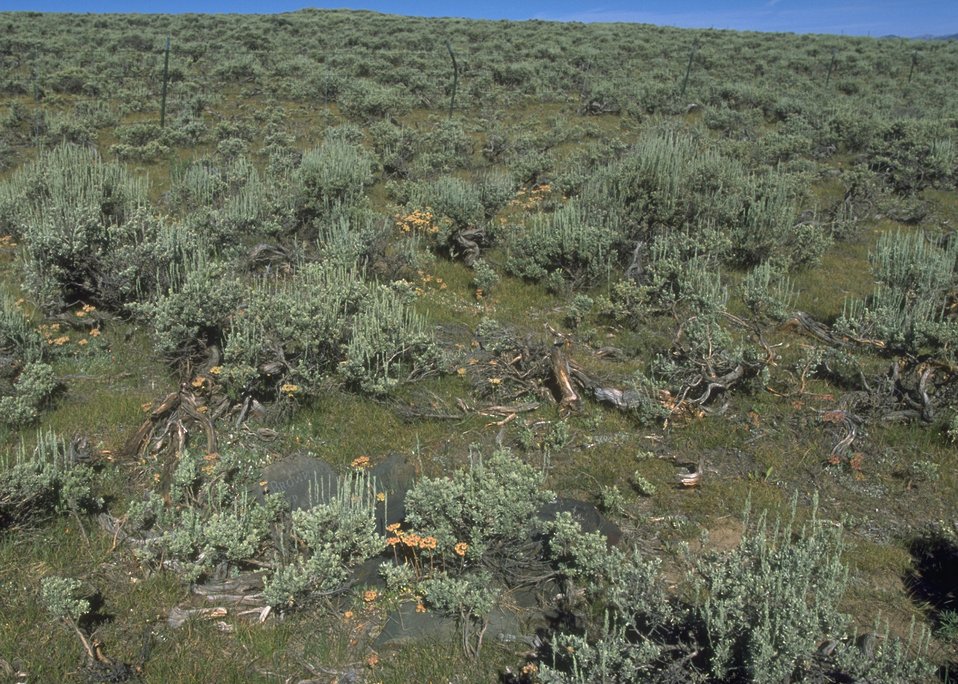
Grave site (foreground) (1857) along the Oregon Trail, Lander Field Office.